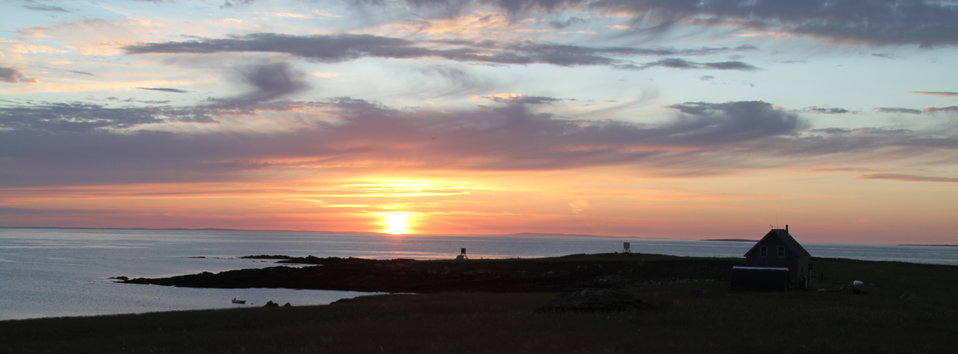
Sunrise on Metinic Island

From Summer with the Seabirds blog: mainecoastalislands.wordpress.com/2010/07/23/metinic-isla...